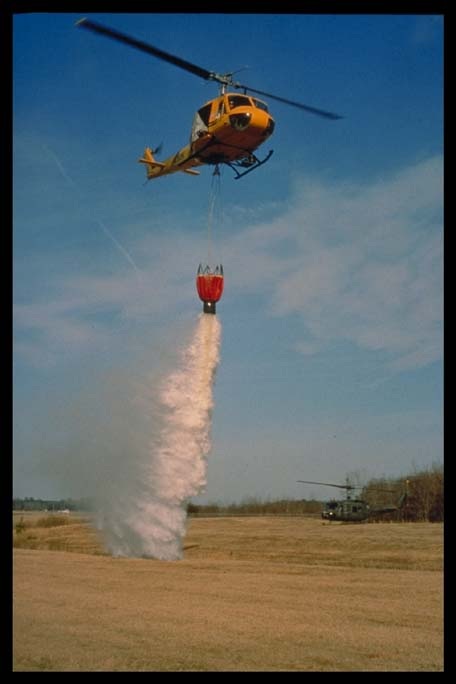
Helicopter with bucket